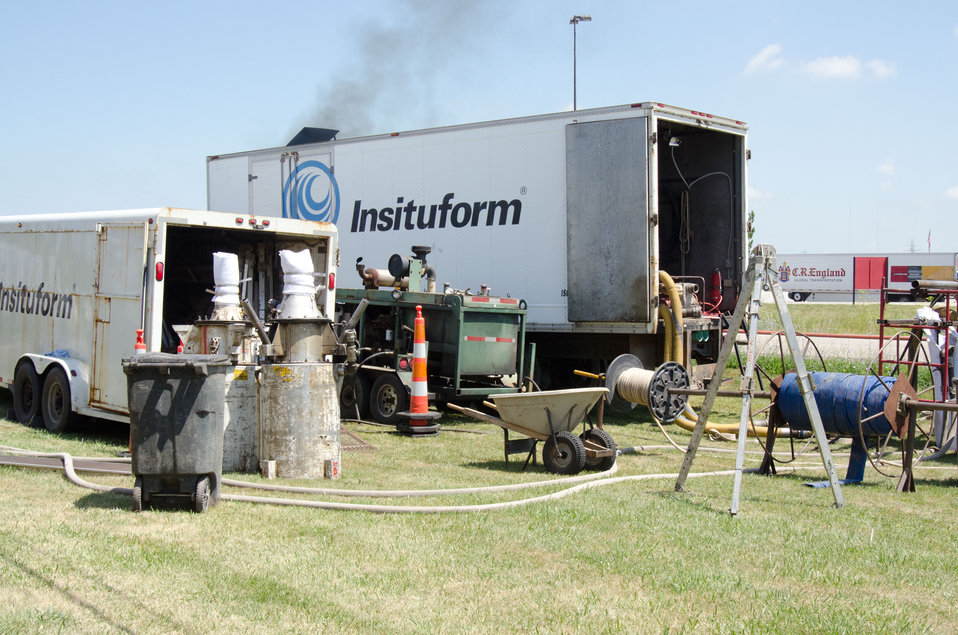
Buena Vista Township Phase II Sewer Project, in Michigan, is the refurbishment and rehabilitation of 45,500 linear feet of defective sewer pipe, seen here on Tuesday, July 19, 2011; and more than 200 manholes; the construction of an off-site excess flow basin; construction of a pump station; and improvements at the wastewater treatment plant. The system will serve 2,349 residential and 177 commercial customers and will bring the township into compliance with environmental regulations regarding pollutant discharges.
Inspections revealed that the 1960s sanitary sewer system had inflow from storm and rainwater systems and overflowed into the sanitary sewer system. Infiltration was found in the form of cracks, and other failures that allowed groundwater to enter. Rather than digging up the old system, rehabilitation with a cured-in-place-pipe (CIPP) method was chosen. This provides up to a 50% savings and the liner is projected to last 50-100 years. CIPP repair of the 8-30” diameter pipes involves pulling a resin-saturated fabric liner through a damaged pipe, which is then cured with steam or hot water to form a tight-fitting, joint less replacement pipe. Trenchless repair methods require less digging than traditional “dig and replace” repair methods and minimize damage to yards and landscaping. There are two of these teams and one manhole rehabilitation to seal the underground casting frame or brick structure. They process 600-800 feet per day.
Wade Trim Inc. Professional Engineer Tiffany Harrison said about working with the United States Department of Agriculture’s Rural Development “It was very easy, they make it very straight forward, in what paperwork they need. They were always available for questions.
USDA Rural Development has funded water and sewer projects in 117 Michigan communities serving more than 94,000 customers.
Senior Advisor to the Secretary of Agriculture Doug O’Brien said, “America will win the future by out-building, out-educating and out-innovating the world,” O'Brien said. “The Obama Administration is committed to the residents and business owners of Buena Vista Township in building the infrastructure needed to protect our environment and ensure clean water for future generations.” Being almost entirely surrounded by the Great Lakes, Michigan residents know that a small problem upstream usually leads to much bigger problems downstream and that the impact of water pollution extends far beyond the immediate community.